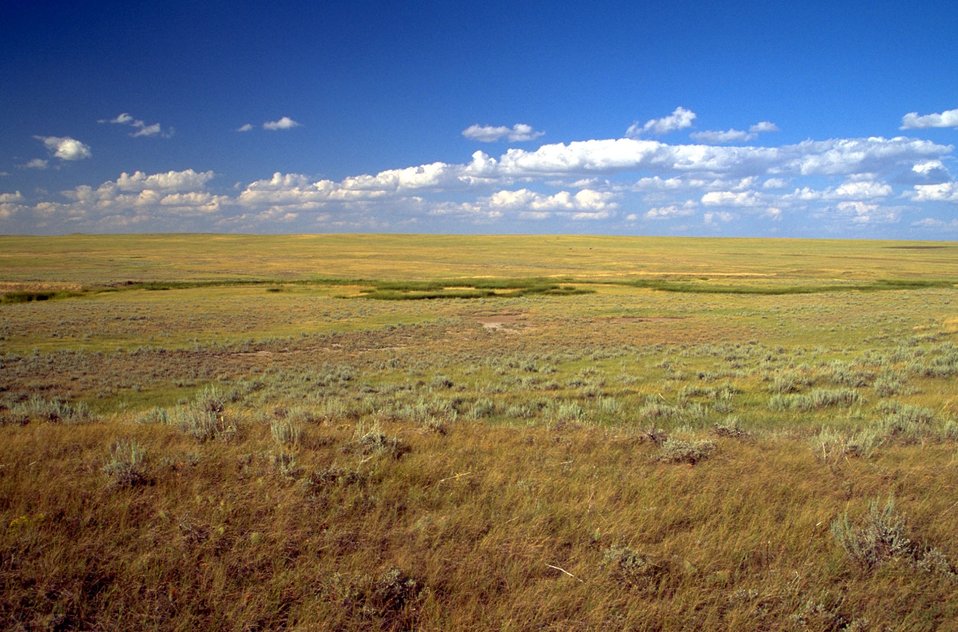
Prairie Cordgrass riparian Battle Creek